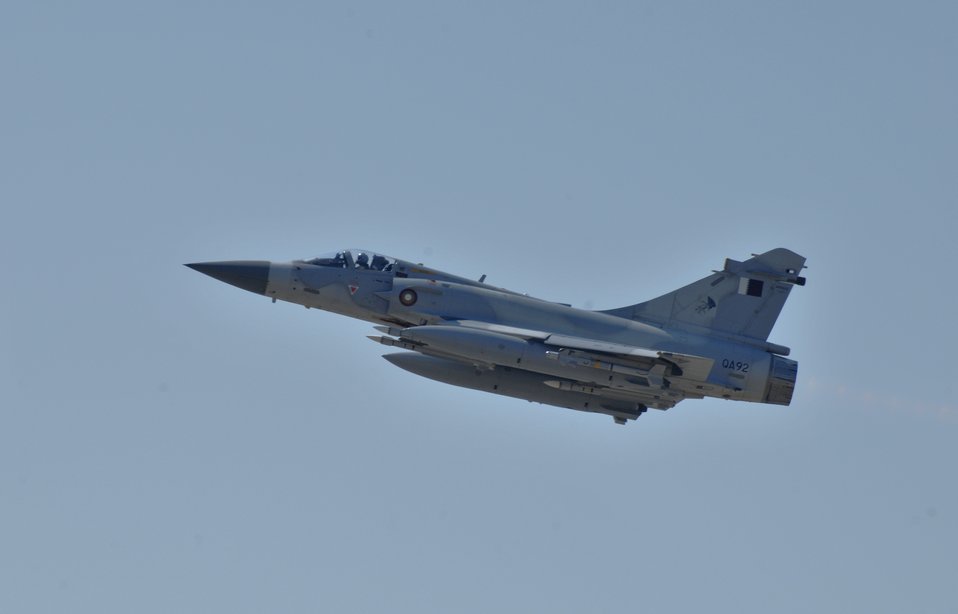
New coalition member flies Operation Odyssey Dawn mission

A Qatar Emiri Air Force Mirage 2000-5 flies its first mission March 25, 2011, in support of Operation Odyssey Dawn. Qatar is the newest member of the coalition supporting the no-fly zone over Libya.